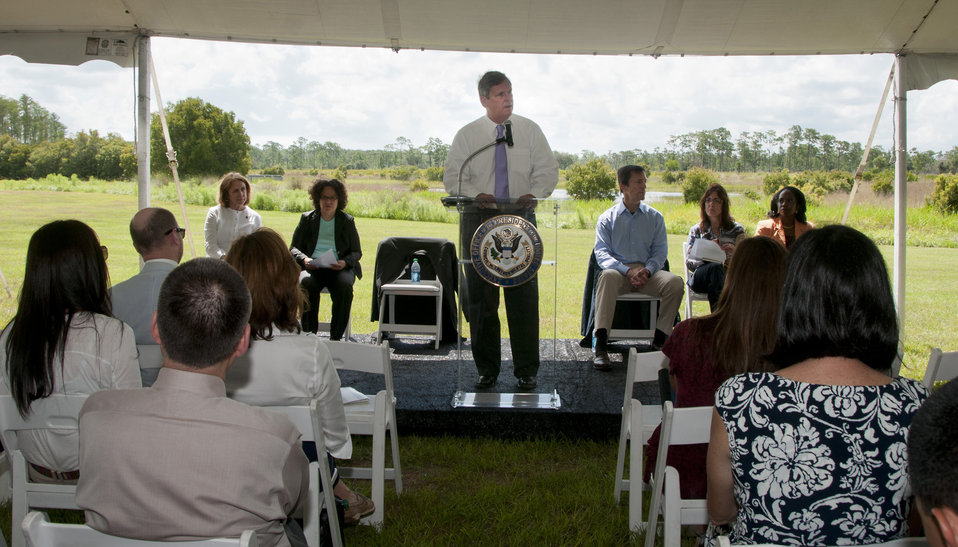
U.S. Department of Agriculture Secretary Tom Vilsack discussed Everglades restoration and announced significant Wetlands Reserve Program (WRP) funding for projects in the Northern Everglades at an America's Great Outdoors event on Friday, July 13, 2012 in Kissimmee, FL.